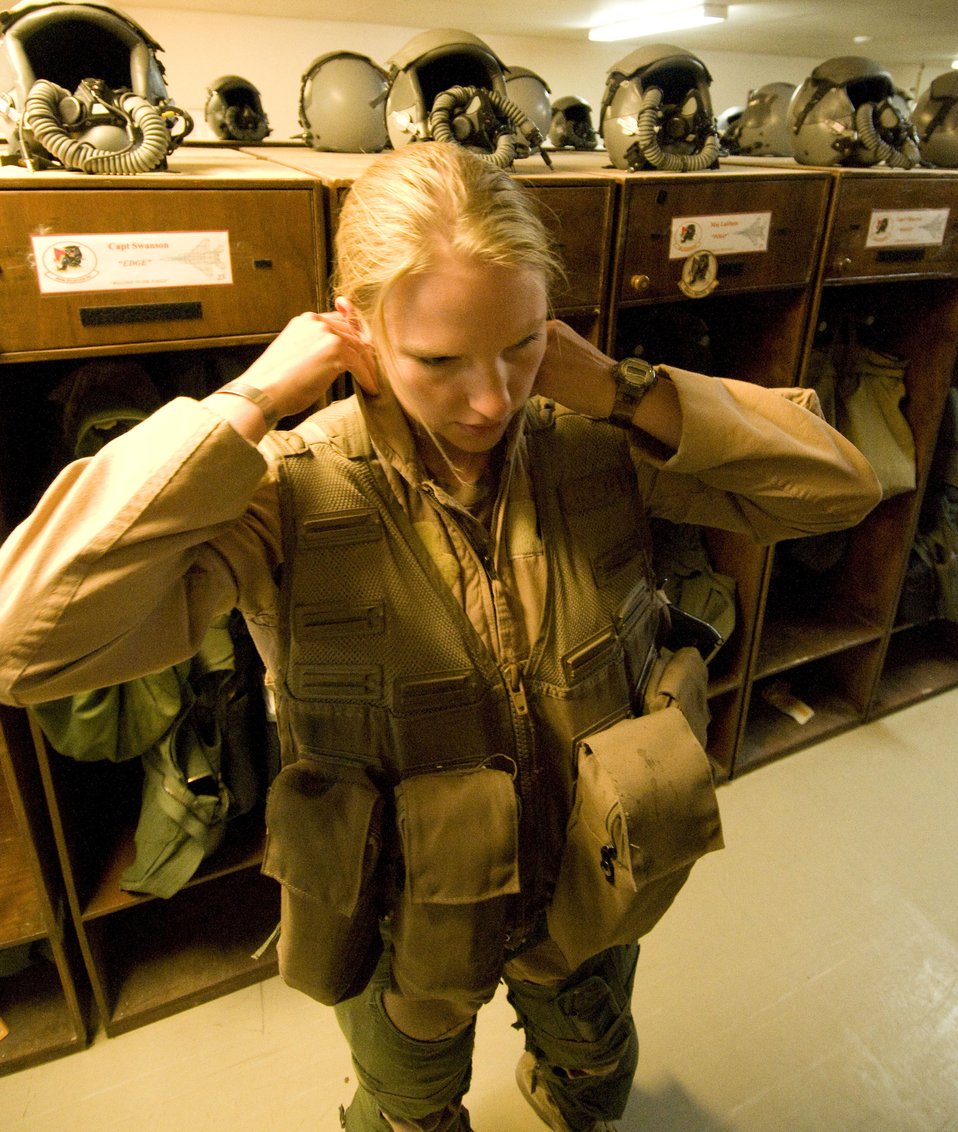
Strike Eagles fly dawn patrol

Capt. Vanessa Mahan, an F-15E Strike Eagle weapons systems officer at Bagram Air Field, Afghanistan, dons her flight gear Aug. 27 as she prepares for a dawn patrol mission. As part of the dawn patrol, Captain Mahan must arrive very early in the morning to be ready at the required launch time. She is deployed from the 335th Fighter Squadron at Seymour Johnson Air Force Base, N.C.